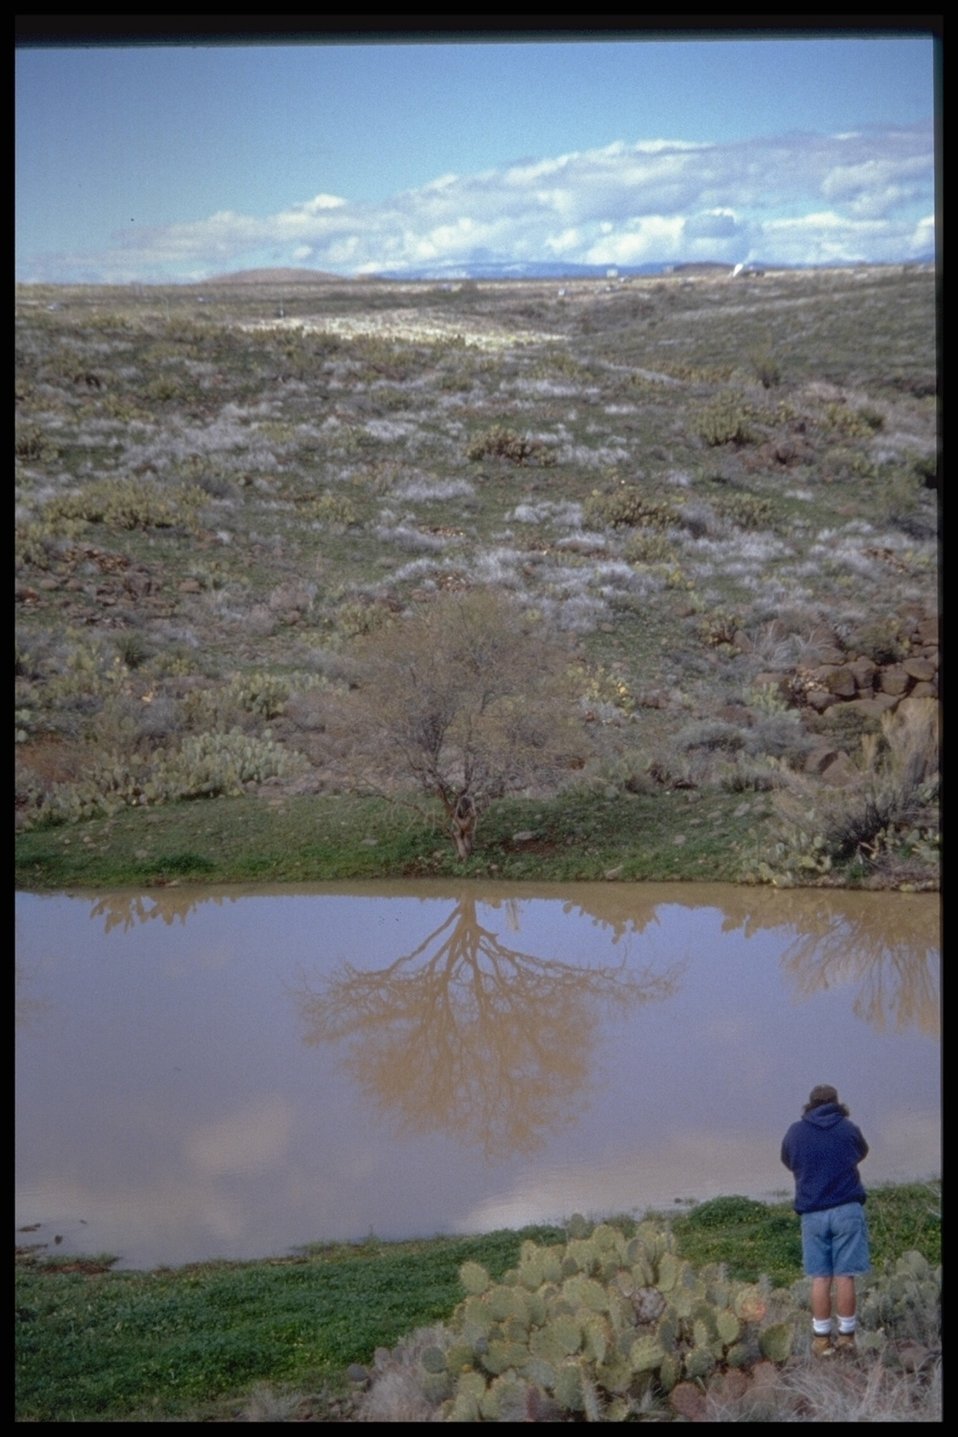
The Agua Fria River runs through the canyon that shares its name.